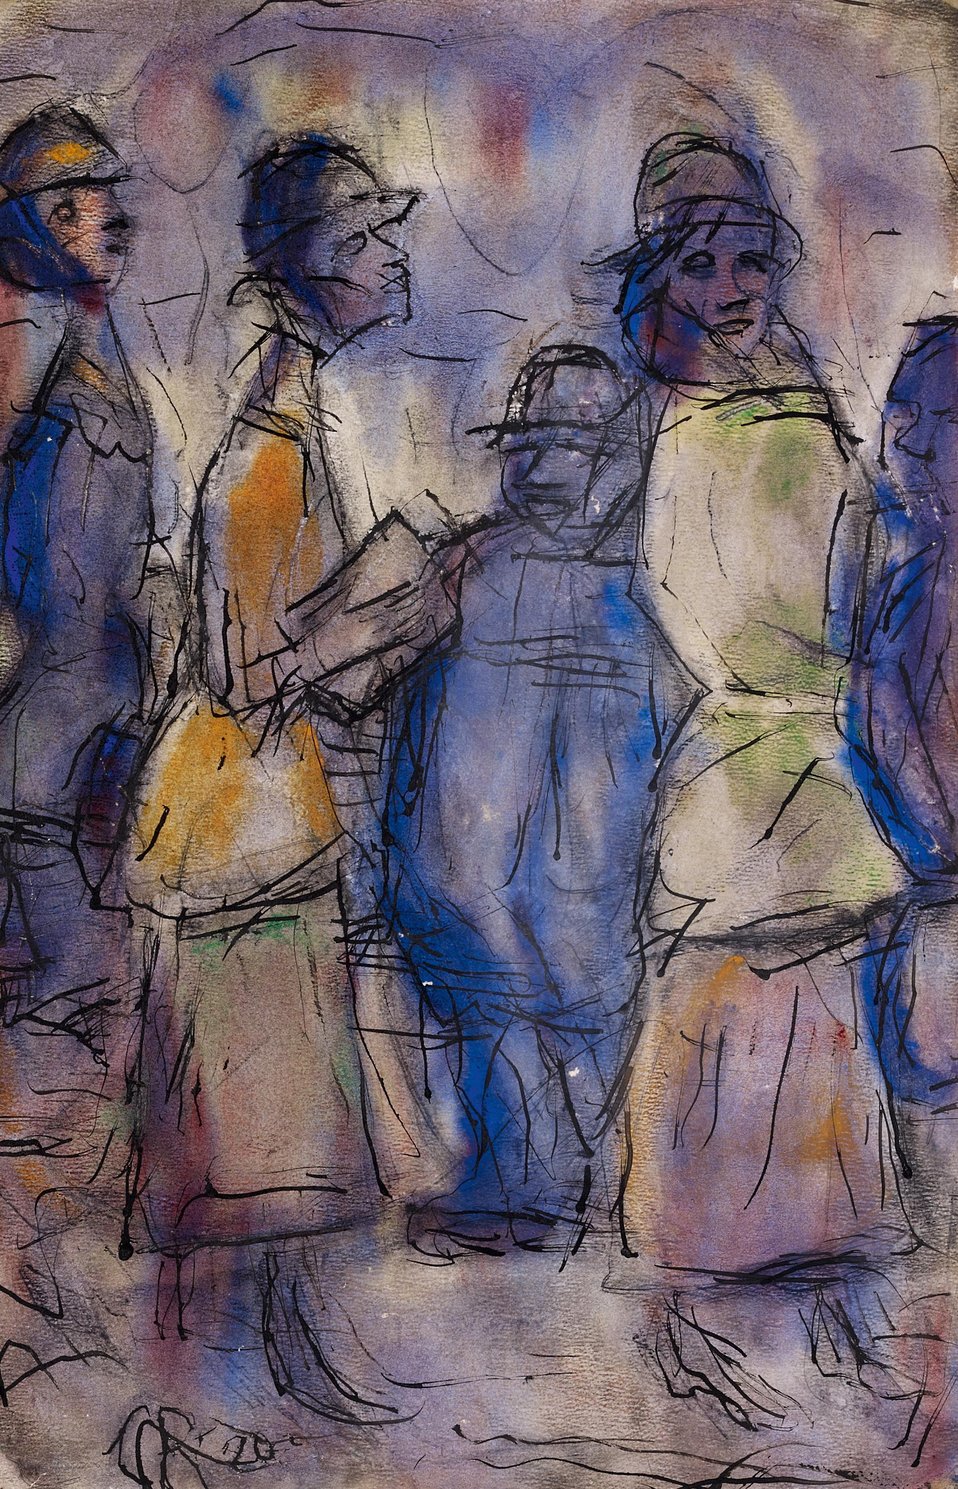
Ohne Titel (Auf der Straße). Mischtechnik auf Velin. 52 x 33,5 cm. Monogrammiert und datiert unten links: CR 20(?).